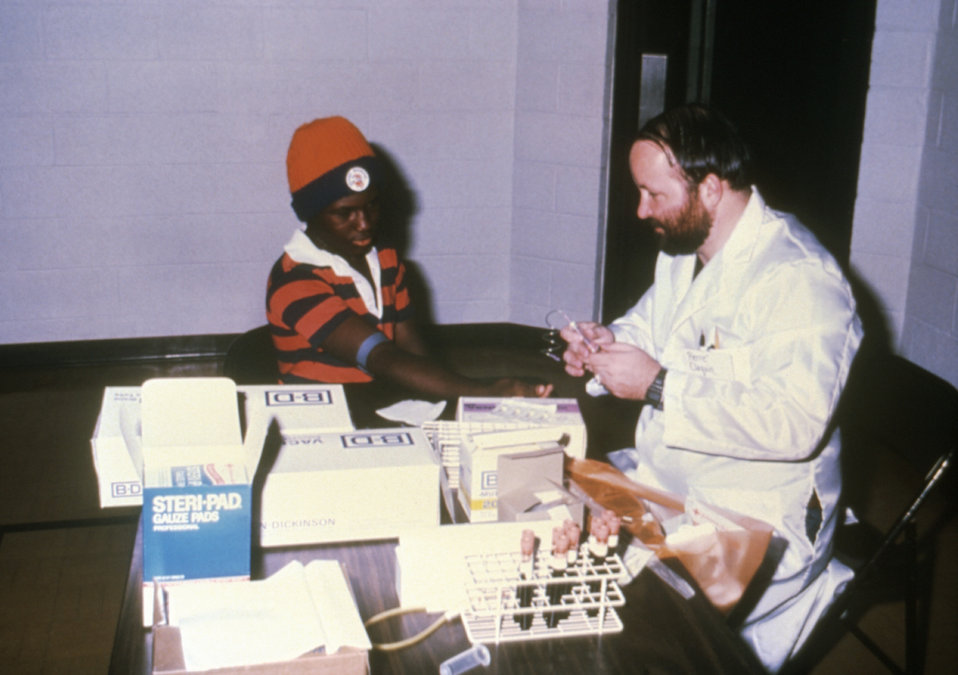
This photograph shows a doctor taking blood from an Alabama resident that had been living near a possibly contaminated stream.